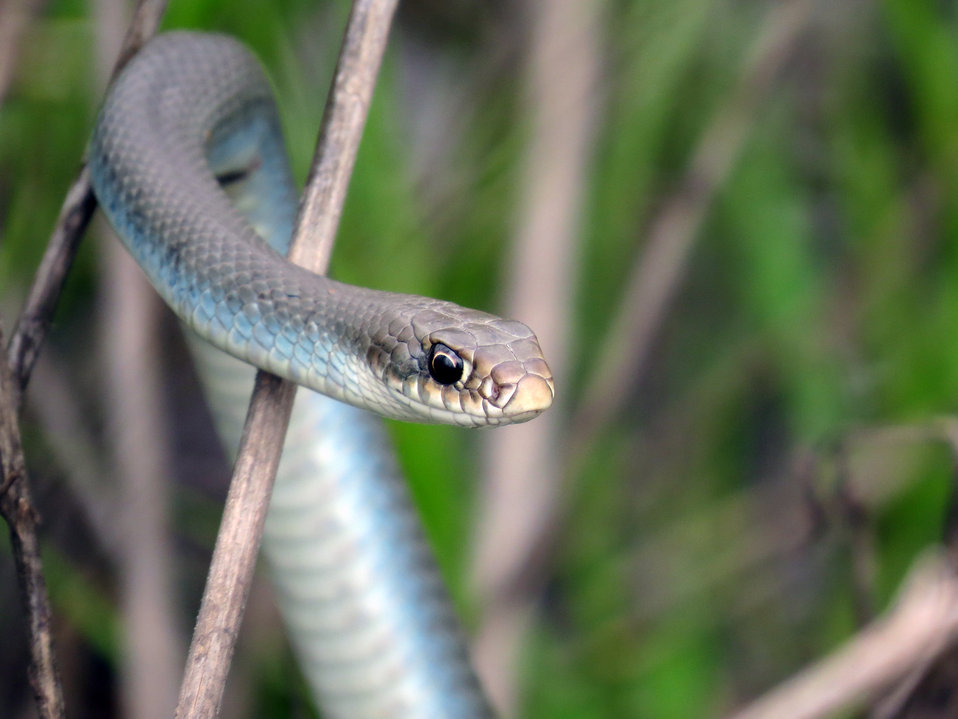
Snake

Coluber constrictor from Port Louisa National Wildlife Service.